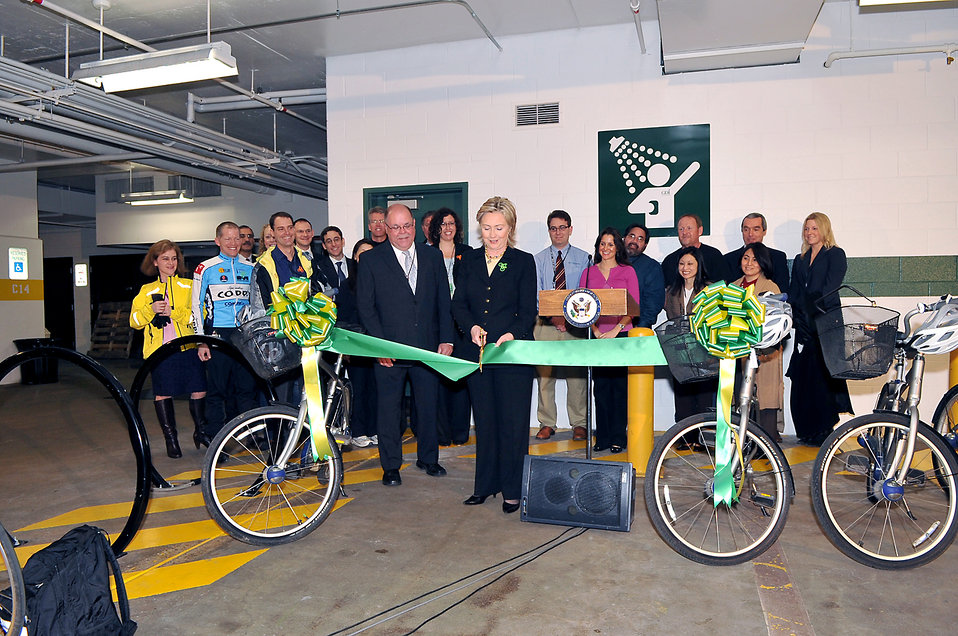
Secretary Clinton Hosts Ribbon Cutting Ceremony for New State Department Showers

U.S. Secretary of State Hillary Rodham Clinton hosts a ribbon cutting ceremony for new showers at the U.S. Department of State in Washington, DC March 15, 2010. The showers are useful for bicycle riders who ride to work.